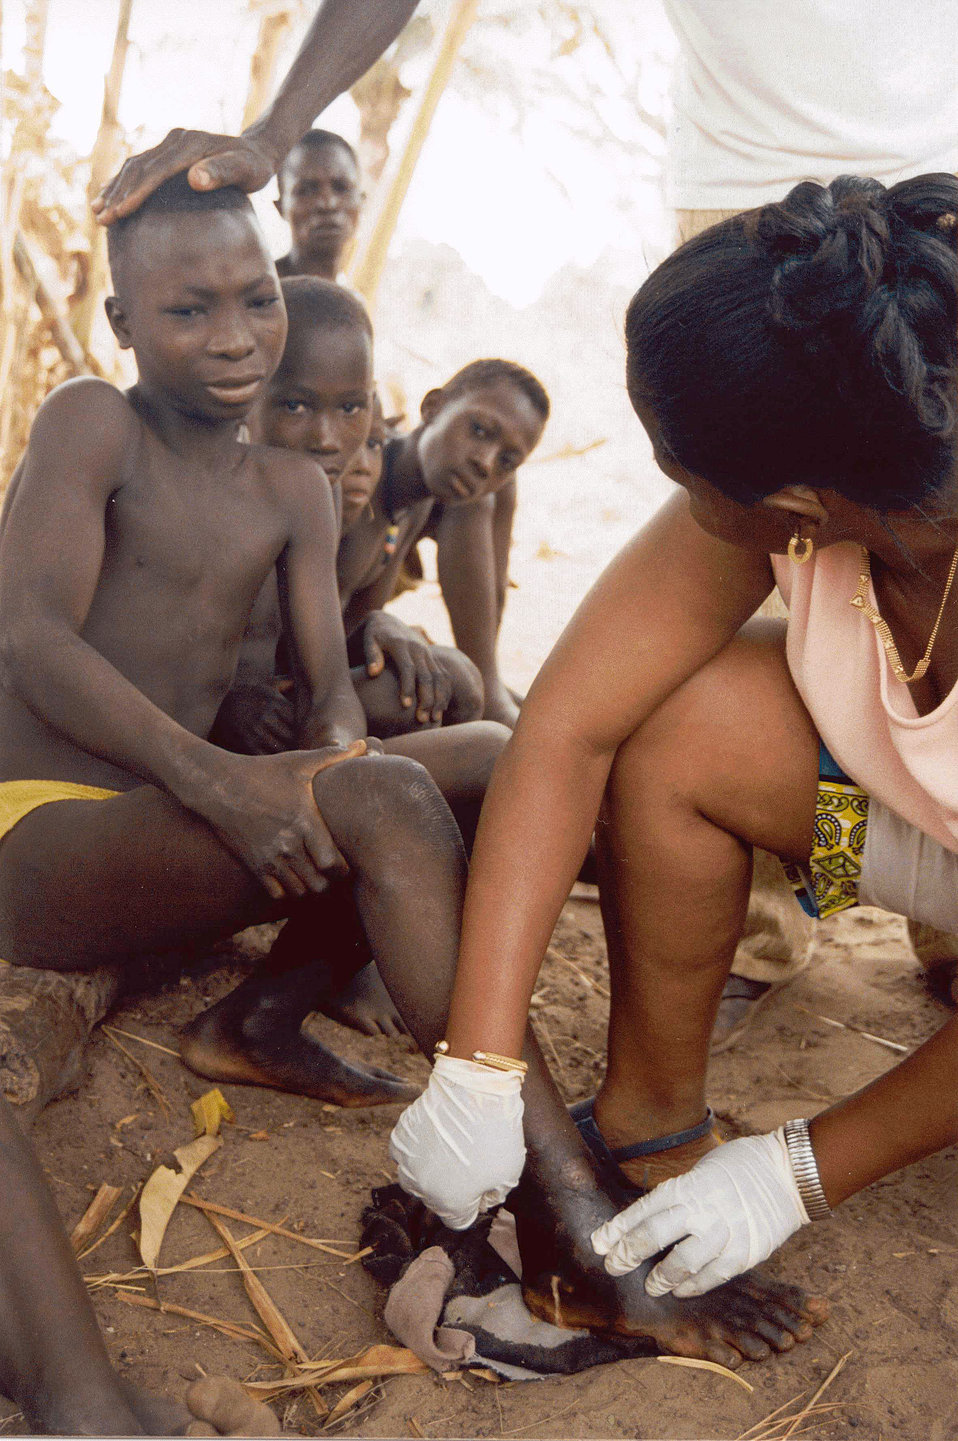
This image depicts the painful suffering of a young girl named Akouma, living in the village of Agbande in the Dofelgou District of Northern Togo. A Guinea worm field nurse named Golda is extracting an adult Guinea worm, Dracunculus medinensis, from the girl's lower right leg. The Guinea worm has migrated, over a period of approximately one year, to its site of emergence to release its eggs in a local pond or stream. Before the worm emerges, a blister develops on the skin. This blister causes a very painful burning sensation and eventually (within 24 - 72hrs) ruptures. Once the white, spaghetti-like worm emerges from the wound, it is pulled out only a few centimeters each day, and wrapped around a small stick or piece of gauze. Sometimes a worm can be pulled out completely within a few days, but this painful process often takes weeks.